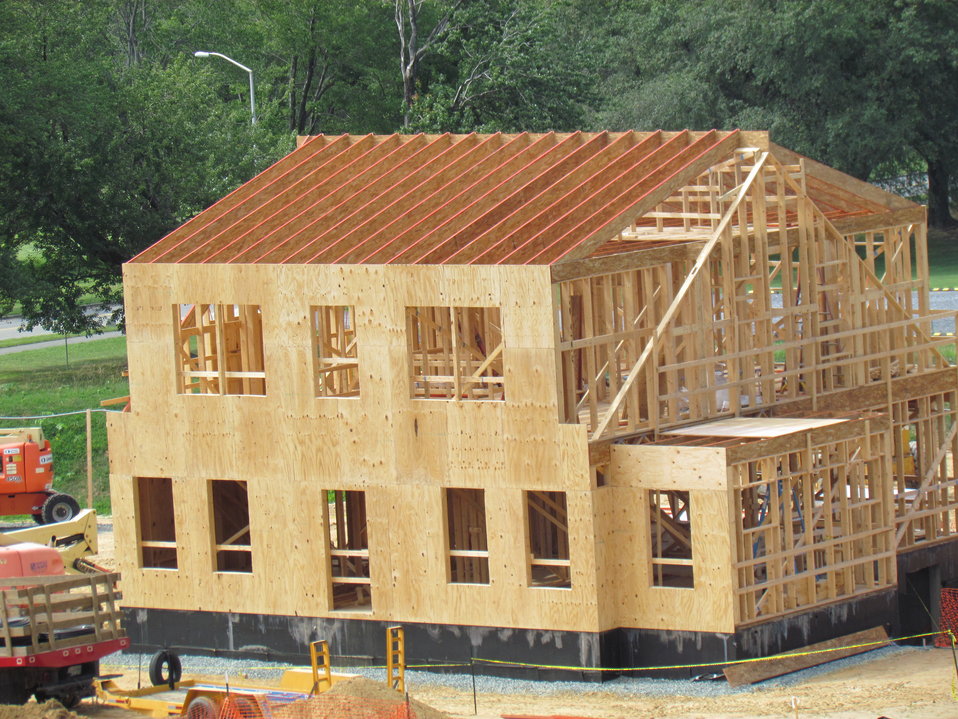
Net-Zero Energy Residential Test Facility - Construction photo showing installation of exterior plywood sheathing on south side of facility.